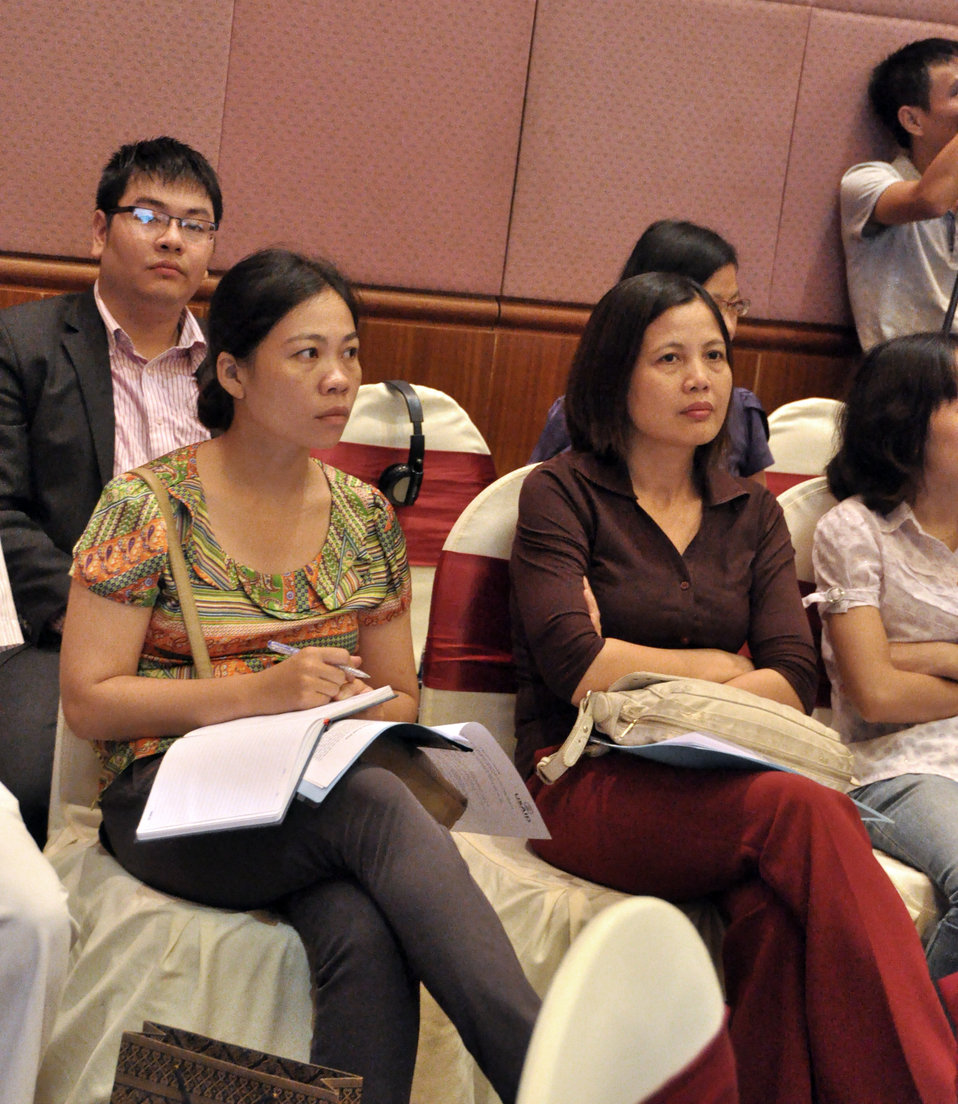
USAID's Support for Trade Acceleration Project (USAID STAR Plus) Closing Ceremony

Hanoi, August 26, 2013.